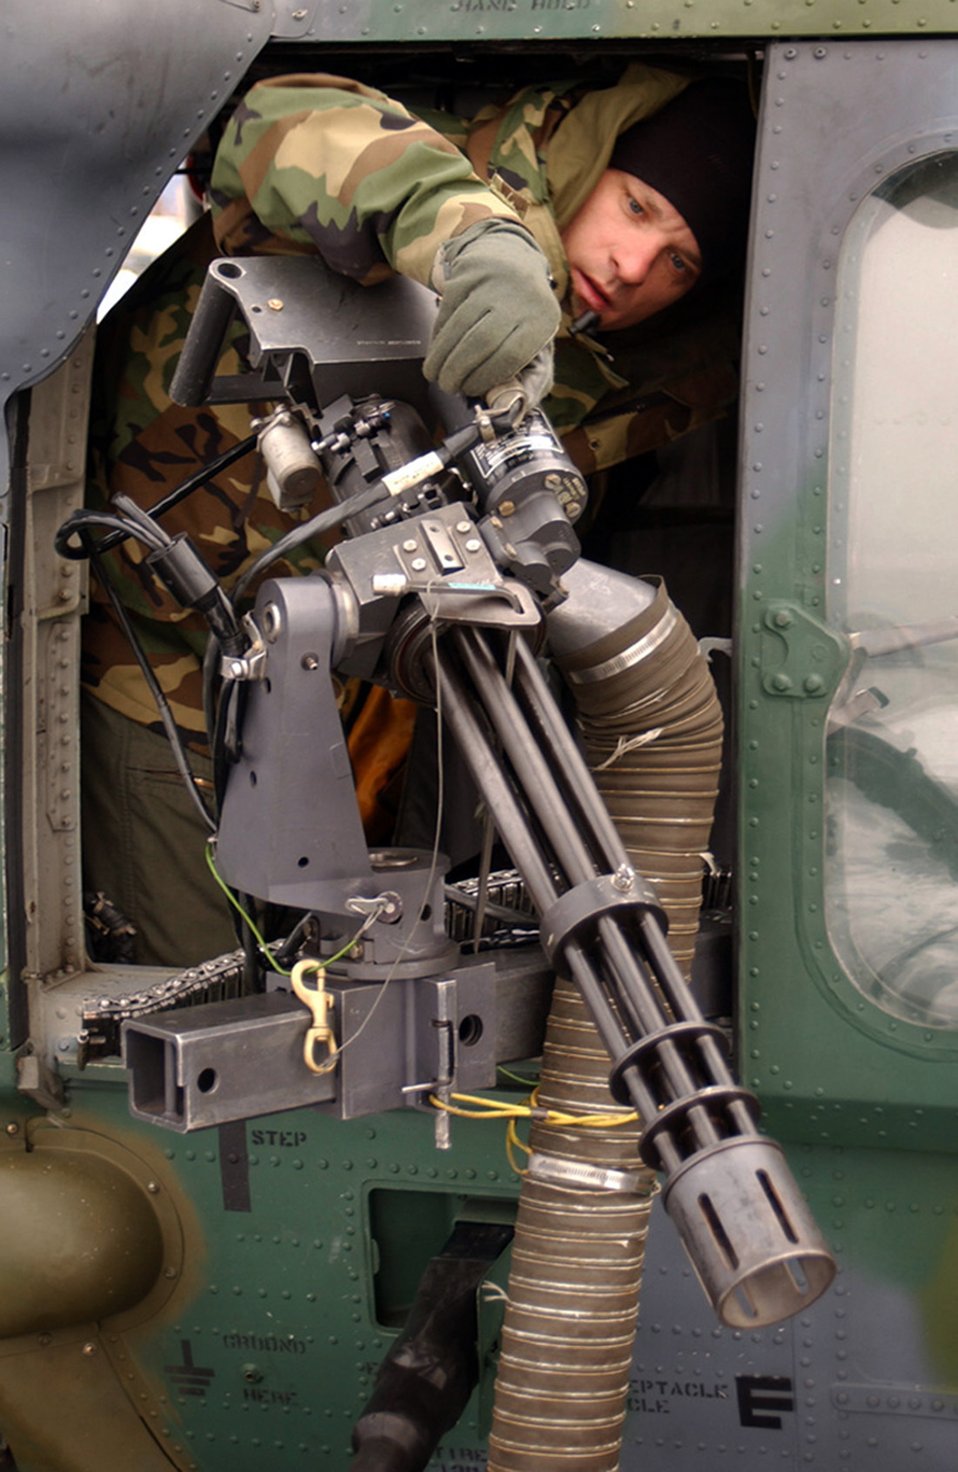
Cope Thunder 06-1

EIELSON AIR FORCE BASE, Alaska -- An Airman works on the GAU-2 multi-barreled machine gun of his HH-60 Pave Hawk helicopter. The troop, from the 33d Rescue Squadron at Kadena Air Base, Japan, did the preflight check before the aircraft took off for Cope Thunder mission Oct. 18. Cope Thunder, a two-week air and ground combat exercise involving more than 1,000 Airmen and Sailors and 87 aircraft that started Oct. 7, ended Oct. 20.